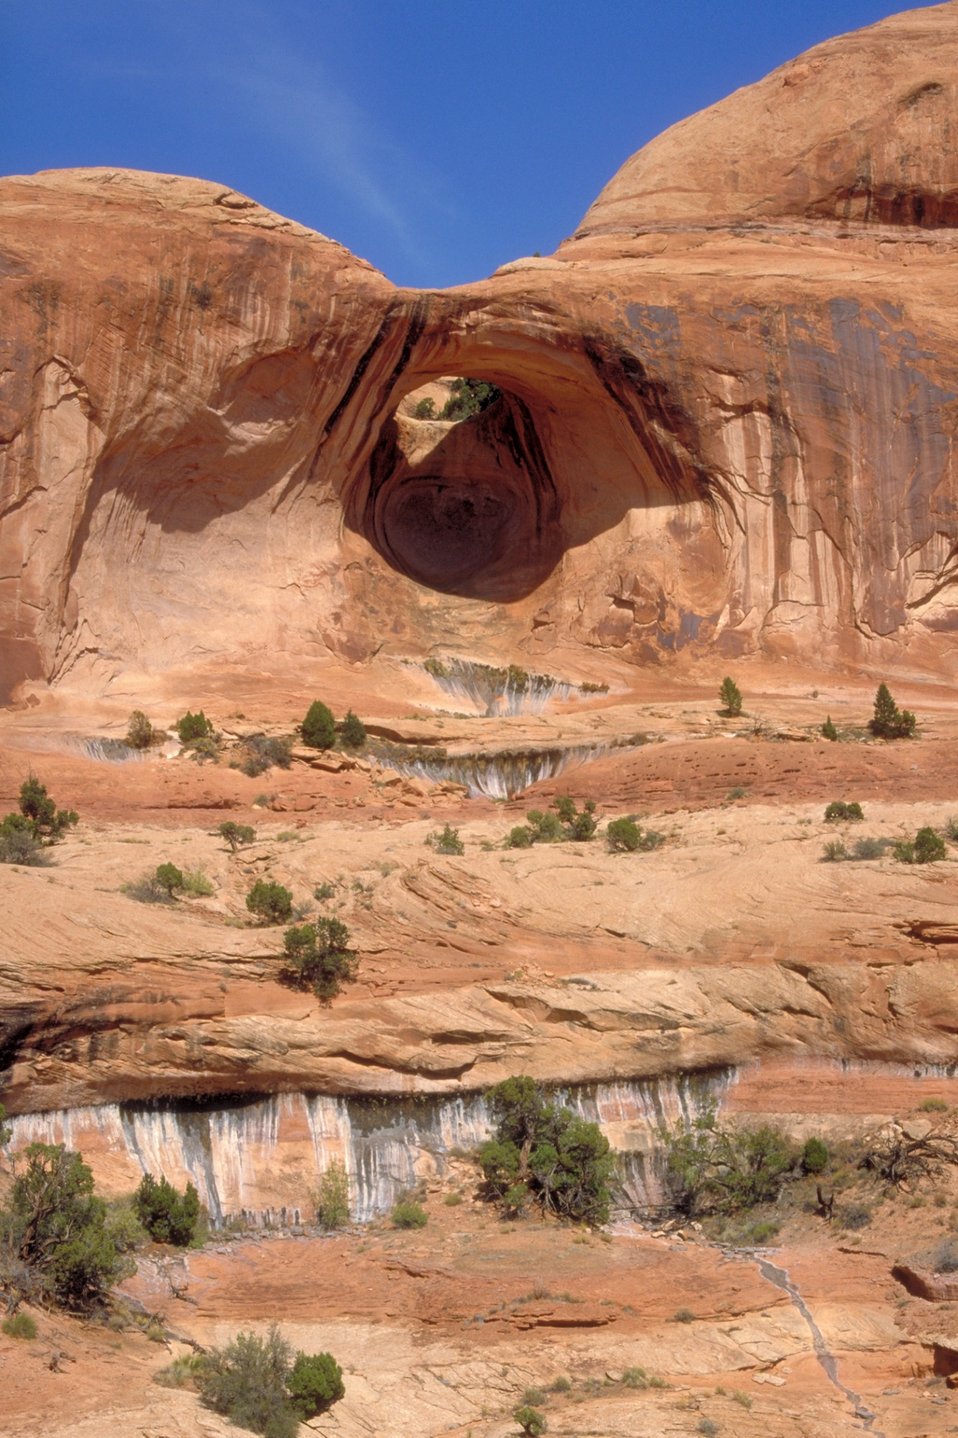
Bowtie Arch near Moab, Utah.